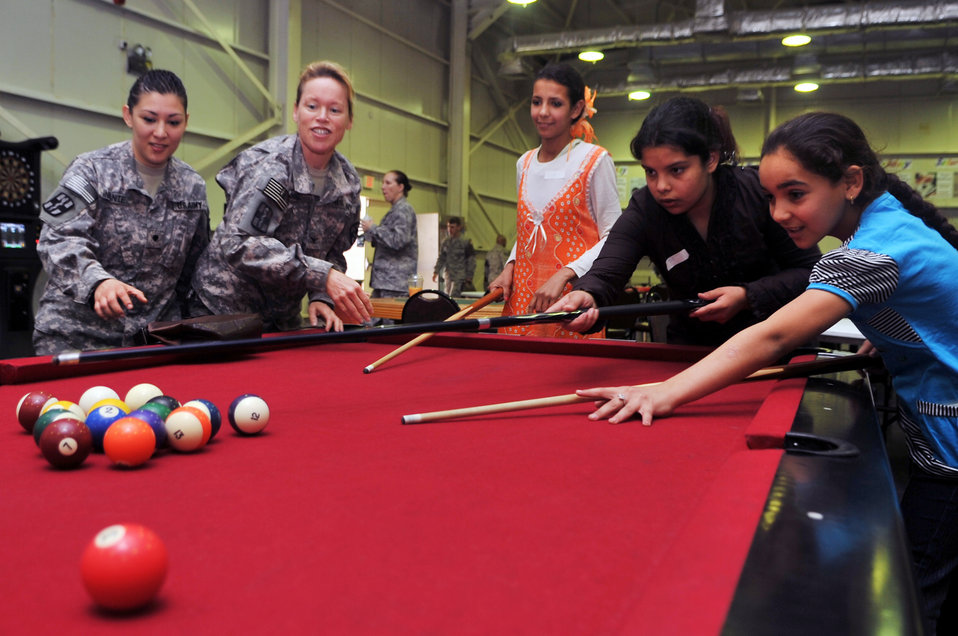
Balad servicemembers strengthen bonds with community, Iraqi children

Army Col. Colleen Shull and Army Spc. Vanessa Infante play a game of billiards with some local children during Iraqi Kids Day April 24, 2010, at Joint Base Balad, Iraq. Colonel Shull is the 502nd Dental Company Area Support officer in charge and Specialist Infante is a 502nd DCAS dental technician.